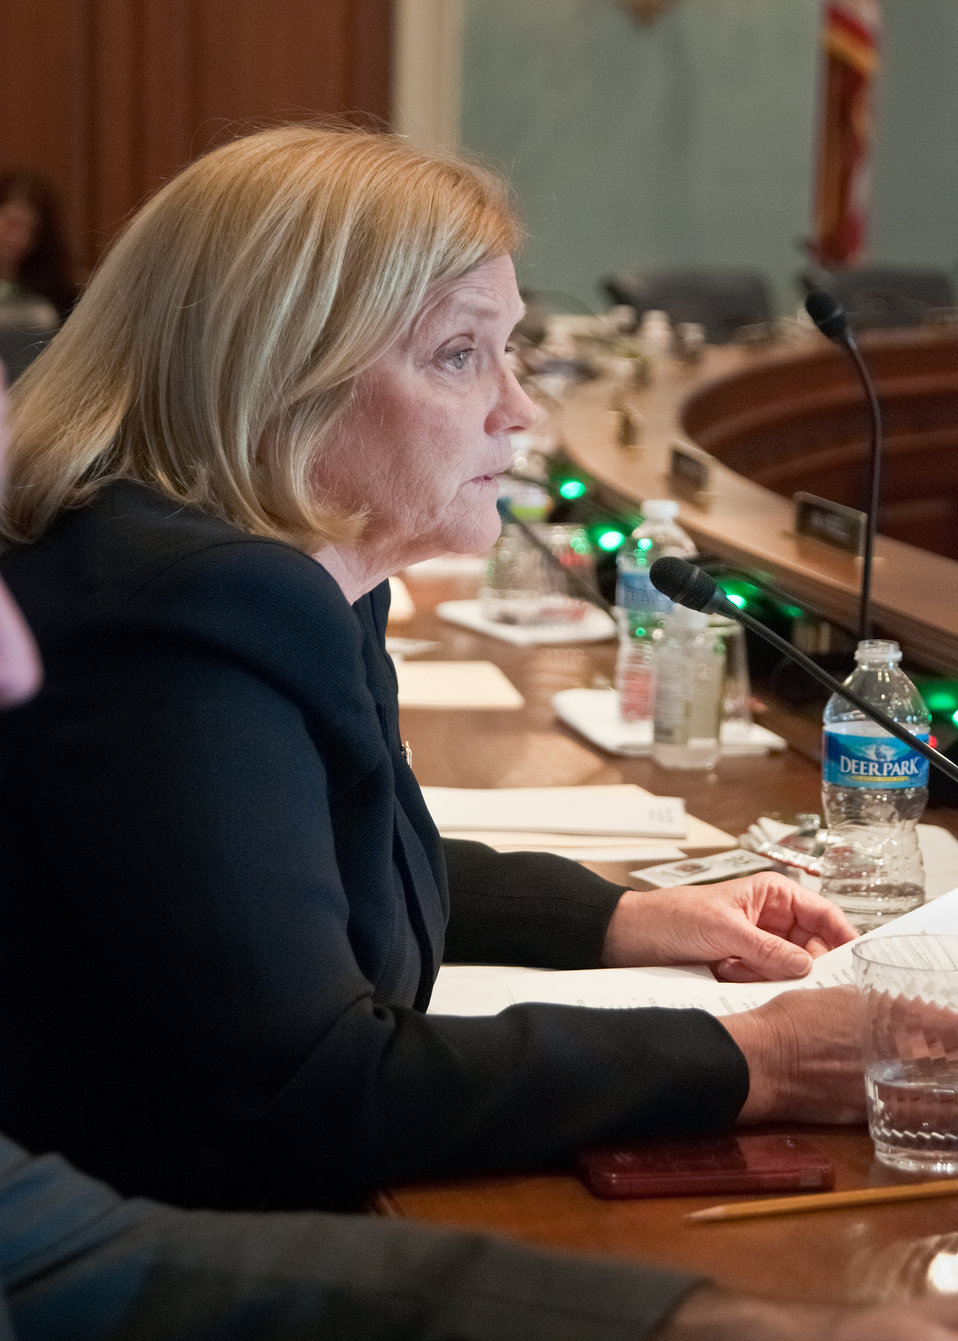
Rep. Chellie Pingree, Maine, of the House Agriculture Committee questioned Agriculture Secretary Tom Vilsack during a House Agriculture Committee hearing on the, “State of the Ag Economy” in the Longworth House Office Building in Washington, D.C., Thursday, February 17, 2011.